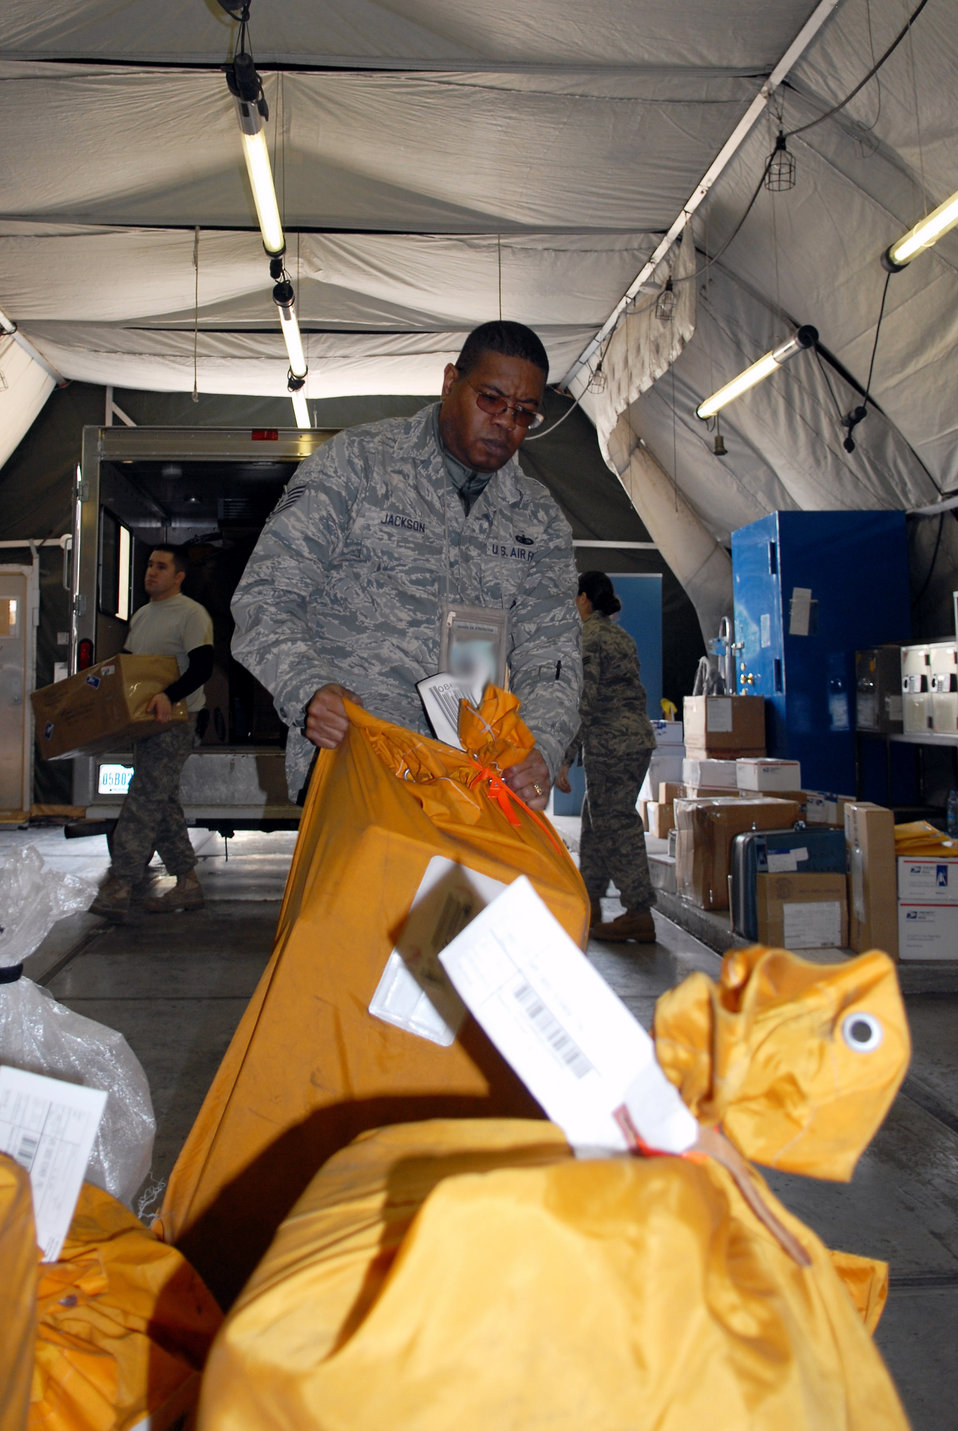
Teamwork helps Manas handle holiday season mail surge

Tech. Sgt. Nelson Jackson volunteers to sort mail Nov. 18 at Manas Air Base Kyrgyzstan. Between Thanksgiving and the first week of January, the Manas AB post office will receive roughly 4,400 pounds of mail every other day until the end of the holiday season. Sergeant Jackson is assigned to the 376th Expeditionary Force Support Squadron.